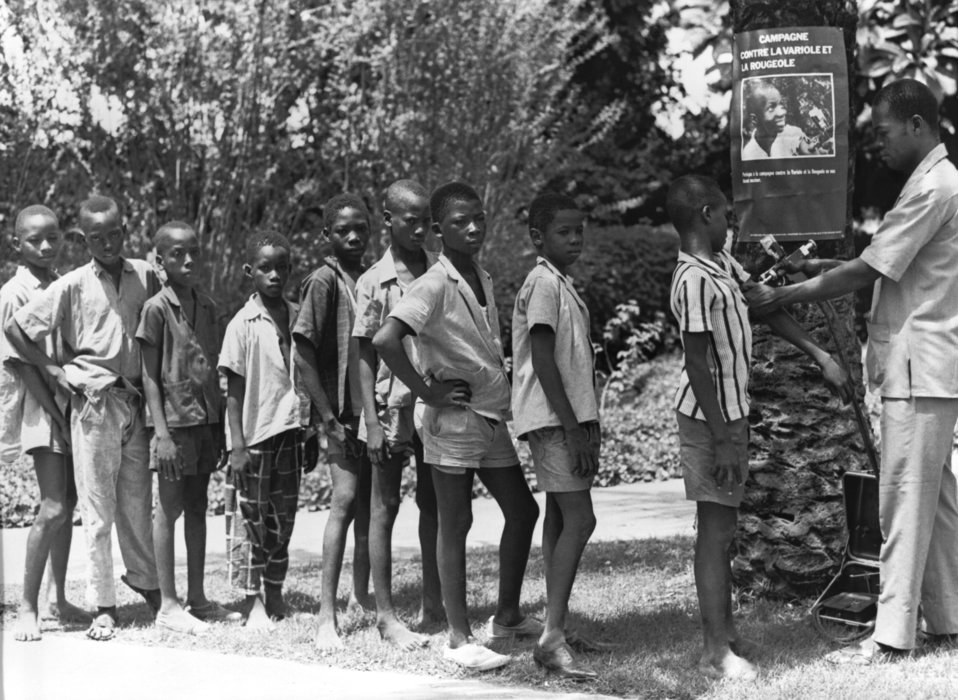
The Smallpox Eradication and Measles Control Programs, West Africa, 1968.